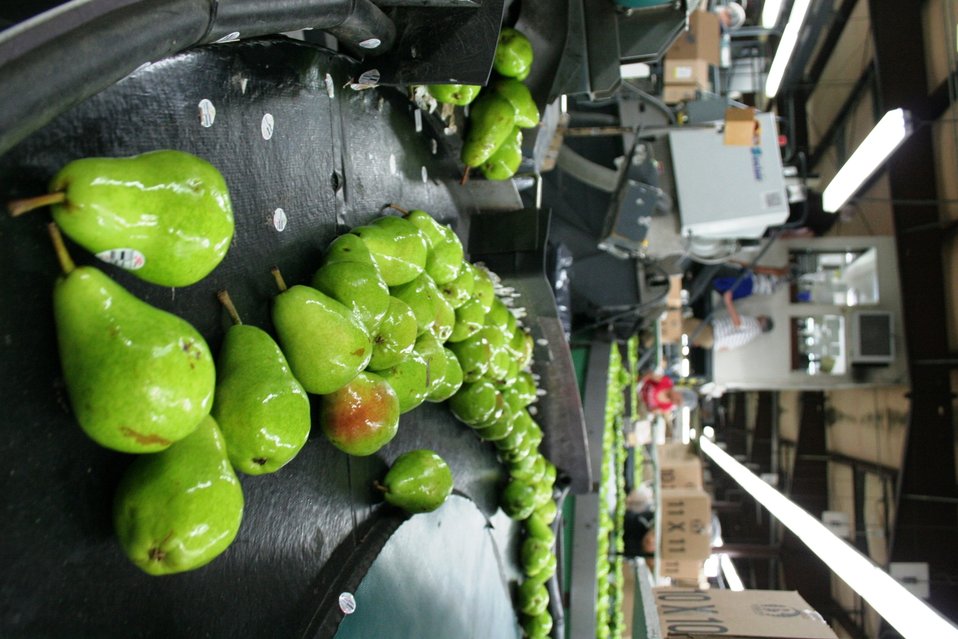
On the Road with Mike Taylor

FDA Deputy Commissioner Michael Taylor (left) and colleagues started a five-day tour of the Pacific Northwest on Sunday, Aug. 11, 2013 -- visiting Idaho, Oregon and Washington -- to get a first-hand look at produce production and irrigation operations, and to discuss the proposed Produce Safety Rule with growers, food industry representatives and state officials. The Pacific Northwest tour included a visit to the fruit packing house at Valley Fruit in Wapato, Wash. For more about Mike's multi-region tour, read these FDA Voice blog posts:

• Hearing the Concerns of Maine Growers Striving for Agricultural Diversity
• On the Road with Mike Taylor: Touring the Pacific Northwest
• On the Road with Mike Taylor, Day 2: Frank Talk in Farm Country
• On the Road with Mike Taylor, Day 3: Families and Partnerships
• On the Road with Mike Taylor, Day 4: Looking to the Future